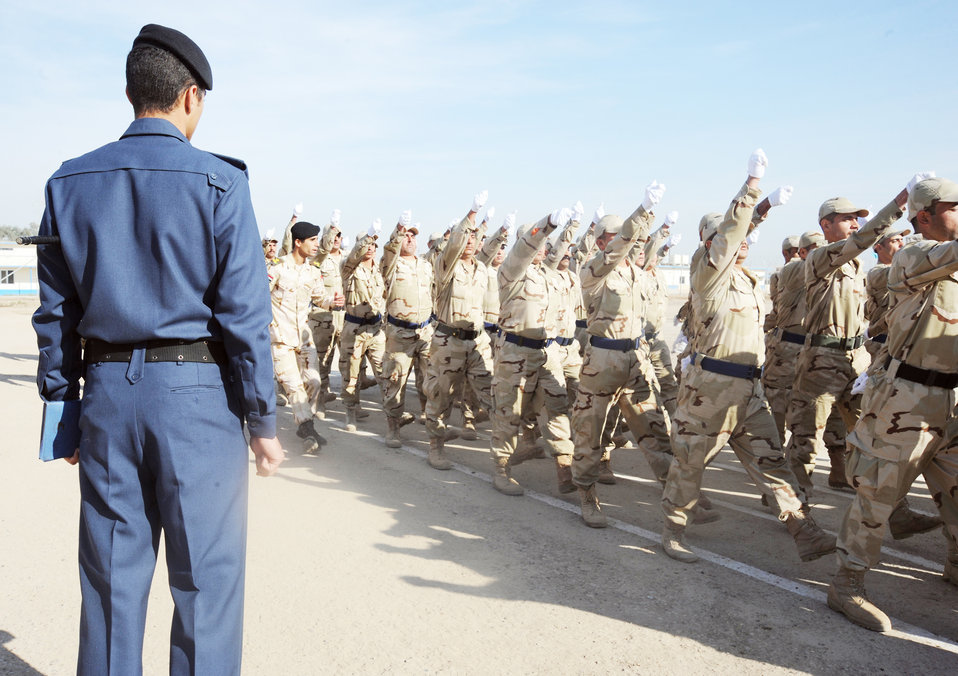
New recruits get a leg up

An Iraqi air force training instructor observes new recruits marching in a pass in review parade at their graduation ceremony from the basic military training Top Off course at the Iraqi Air Force Training School Dec. 28, 2009, at Camp Taji, Iraq. The staff incorporated discipline, marching, and drill during the morning sessions and academics in the afternoon.